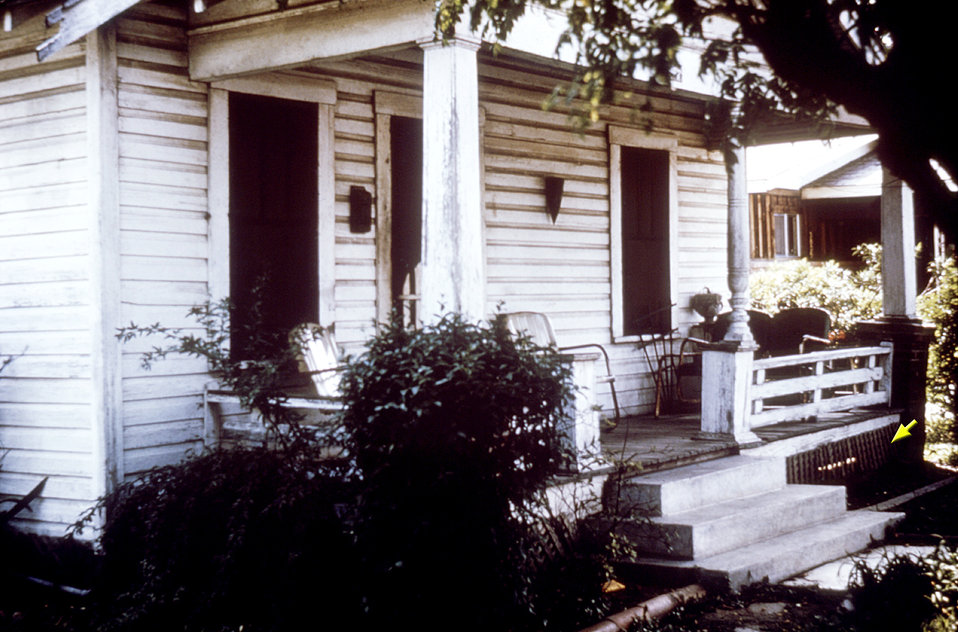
This photograph shows lattice work under a porch (yellow arrow on Rt), which creates an ideal "resting station" for mosquitoes.